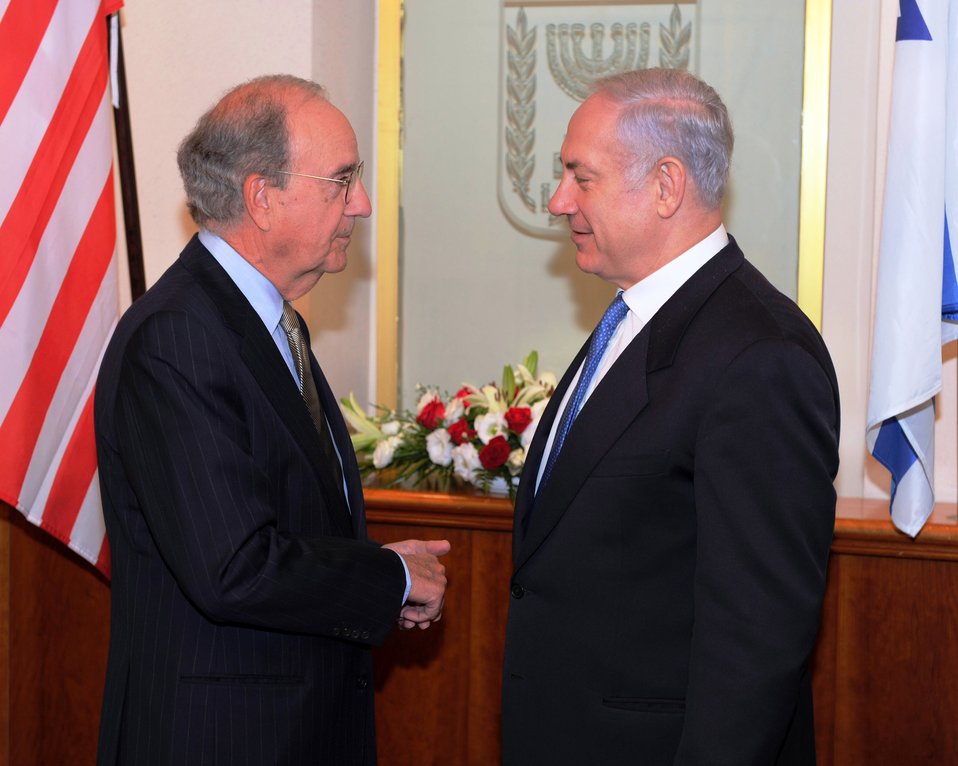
Special Envoy Mitchell Speaks With Israeli Prime Minister Netanyahu

U.S. Special Envoy for Middle East Peace George Mitchell speaks with Israeli Prime Minister Benjamin Netanyahu at the Prime Minister's office in Jerusalem on August 11, 2010.